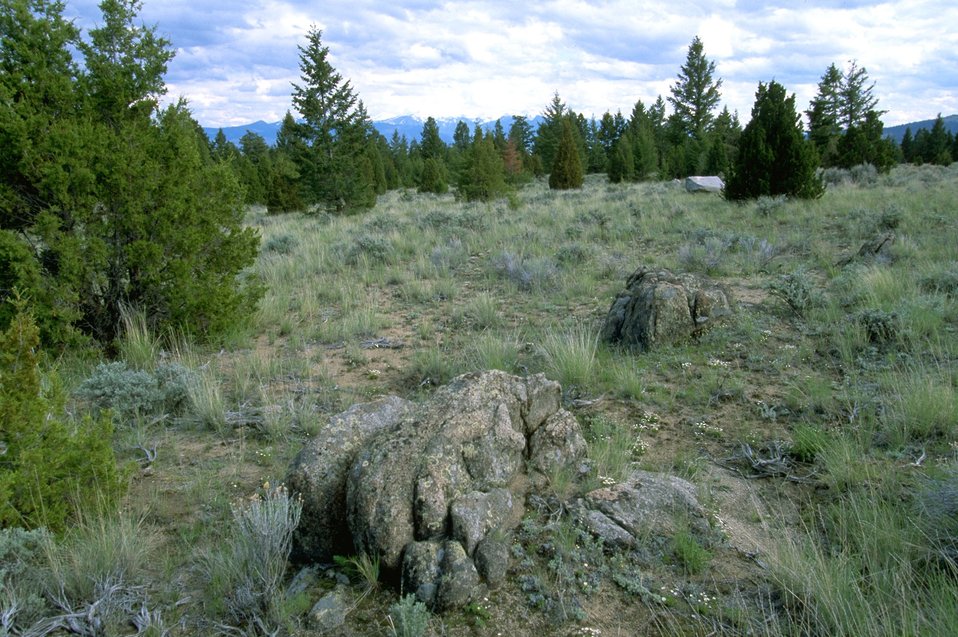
Large rocks and vegetation in the Pipestone Hills